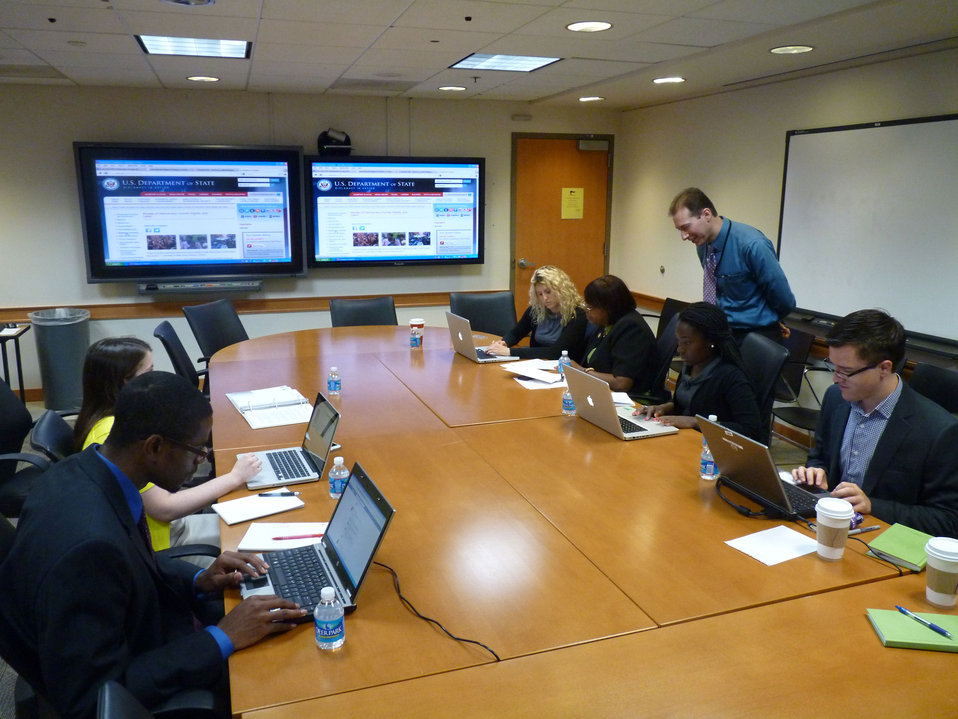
Ambassador Suzan Johnson Cook Participates in a Facebook Chat

Ambassador-at-Large for International Religious Freedom Suzan Johnson Cook participates in a Facebook chat at the U.S. Department of State in Washington, D.C., on August 7, 2012.